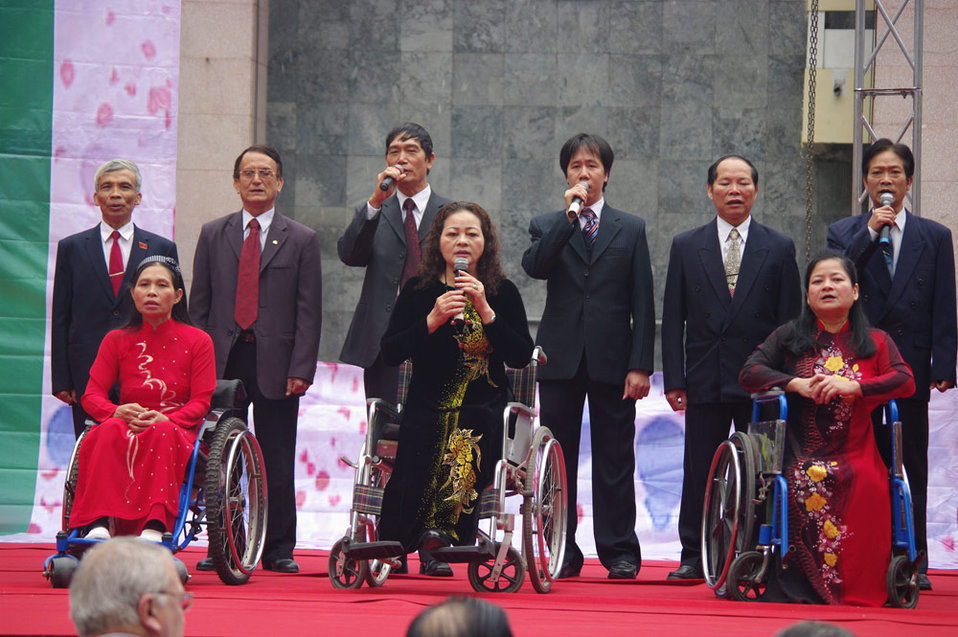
International Day of Persons with Disabilities 2010